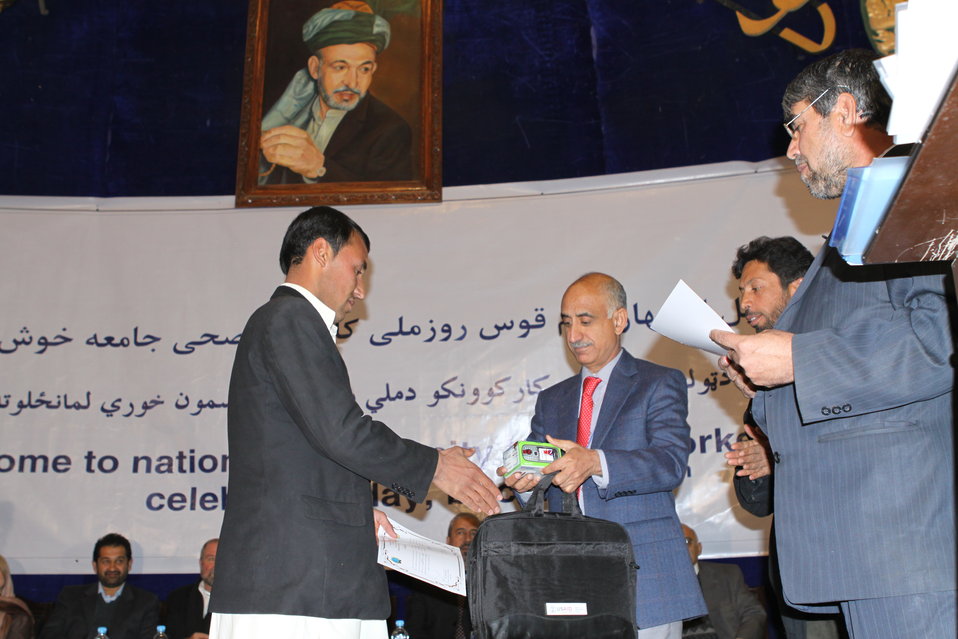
Community Health Workers Celebrated

Kabul, Afghanistan | December 5, 2010 — In support of the United Nations designated International Volunteer Day for Economic and Social Development, Afghanistan’s Ministry of Public Health celebrated its annual Community Health Worker Day today. Acting Minister of Public Health Dr. Suraya Dalil, USAID Senior Deputy Mission Director Robert Hellyer, other government officials, and international donors joined in recognizing the critical contribution of community health workers in Afghanistan and encouraging them to continue their voluntary support to their communities.
The event praised the contributions of the more than 22,000 volunteers throughout the country who deliver community level health-education, counseling, and services out of village health posts located in private homes. The Ministry of Public Health envisioned that community-based healthcare programs will actively encourage communities and families to adopt healthy lifestyles and behaviors, and provide families access to high quality and socially acceptable preventative medicine and life-saving services.
“We have 22,000 community health workers in Afghanistan that are able to implement the basic and standard medicines. They all have been trained through a job description,” said Minister Dalil. Addressing the health workers, she added, “I am proud and feel powerful that I have people like you.”
USAID-funded health projects collaborate closely with the Ministry of Public Health to improve the health and nutritional status of Afghans, provide quality primary healthcare, and promote healthy behaviors at the community and household-levels. USAID supported the training of more than 9,000 of the volunteer community health workers currently working in Afghanistan.
“On behalf of the American people, I congratulate the Community Health Workers for their diligence to gain the skills and knowledge necessary to serve their communities in this important role,” said USAID Senior Deputy Mission Director Hellyer. “USAID strongly supports community based health care and believes that quality community-based health services are essential to reaching Afghanistan’s Millennium Development Goals.”
To support the Basic Package of Health Services, USAID assisted in developing the community health worker training manual, helped train community health worker supervisors and master-trainers, facilitated in-service training, and produced and developed reporting tools, job aids, and education materials.